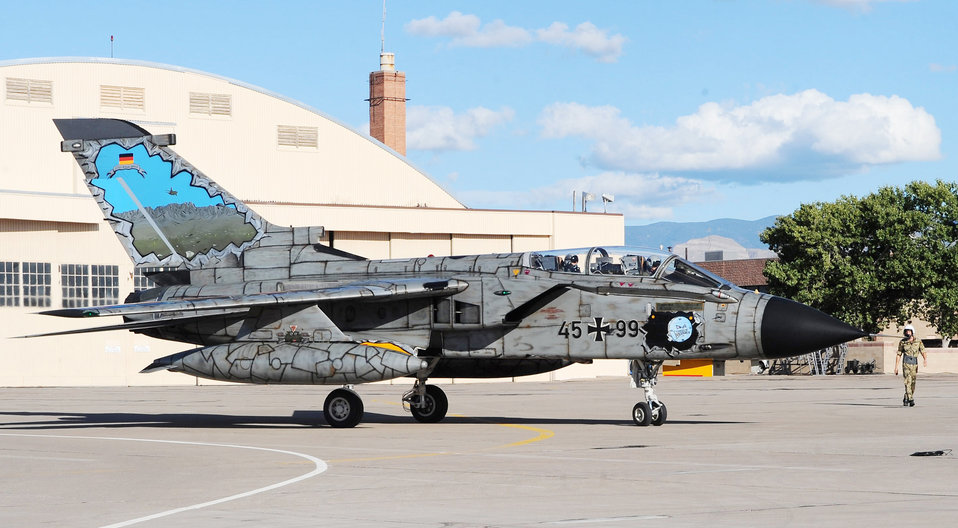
GAF FTC commemorates 55,555 flight hours

Col. Peter Klement, German air force Flying Training Center commander and Col. Jeff Harrigian, 49th Fighter Wing commander, taxi a specially painted German Tornado at Holloman Air Force Base, N.M. Oct. 13, 2009, prior to take off. During the flight, the two colonels flew the 55,555 flight hour by FTC aircrews. Members of the German air force and the 49th FW gathered for a ceremony following the flight to commemorate the achievement.